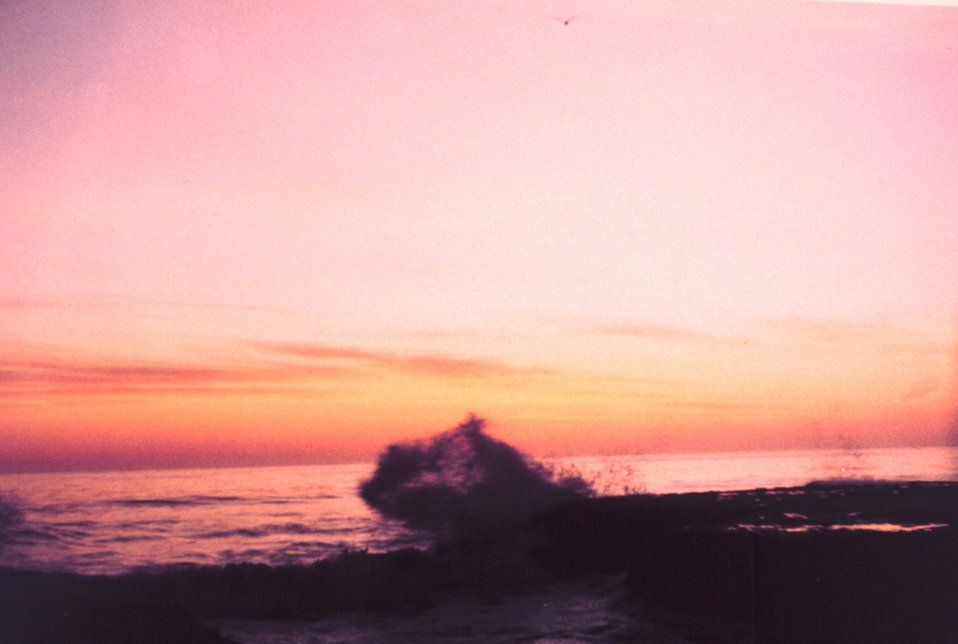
Soquel Point sunset.